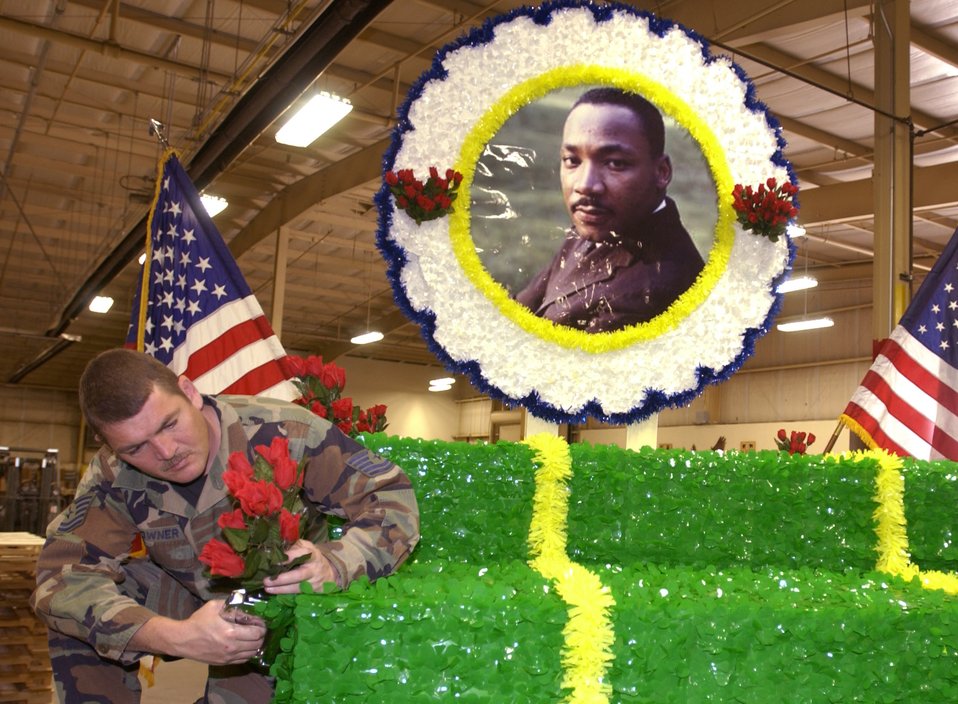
Martin Luther King parade

NELLIS AIR FORCE BASE, Nev. -- Tech. Sgt. David Downer works on a base-sponsored float that participated in the Dr. Martin Luther King Day parade on Jan. 14 in Las Vegas. He is with the 99th Logistics Readiness Squadron.